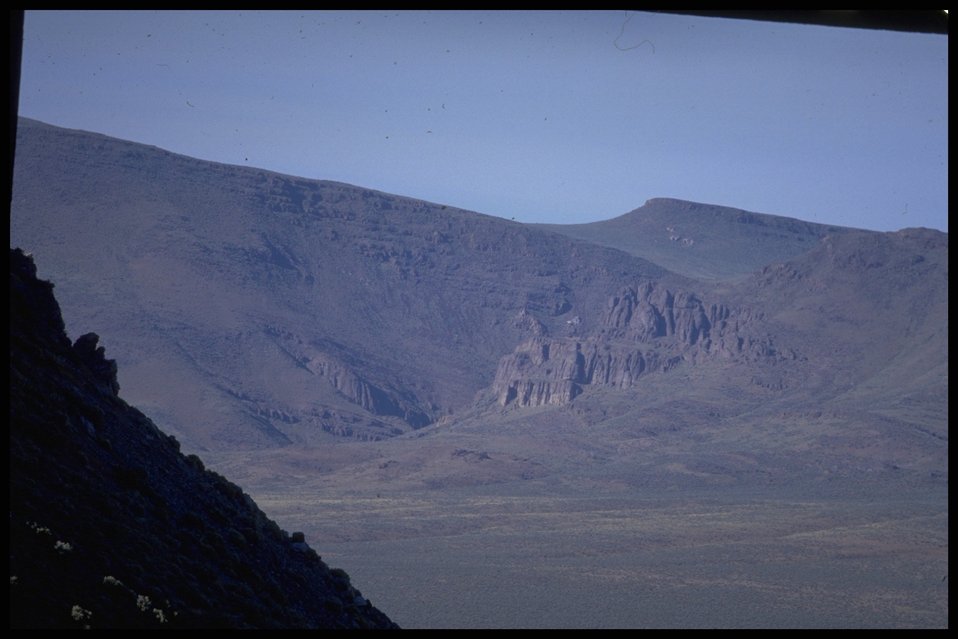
Scenic view of desert, Lakeview District.